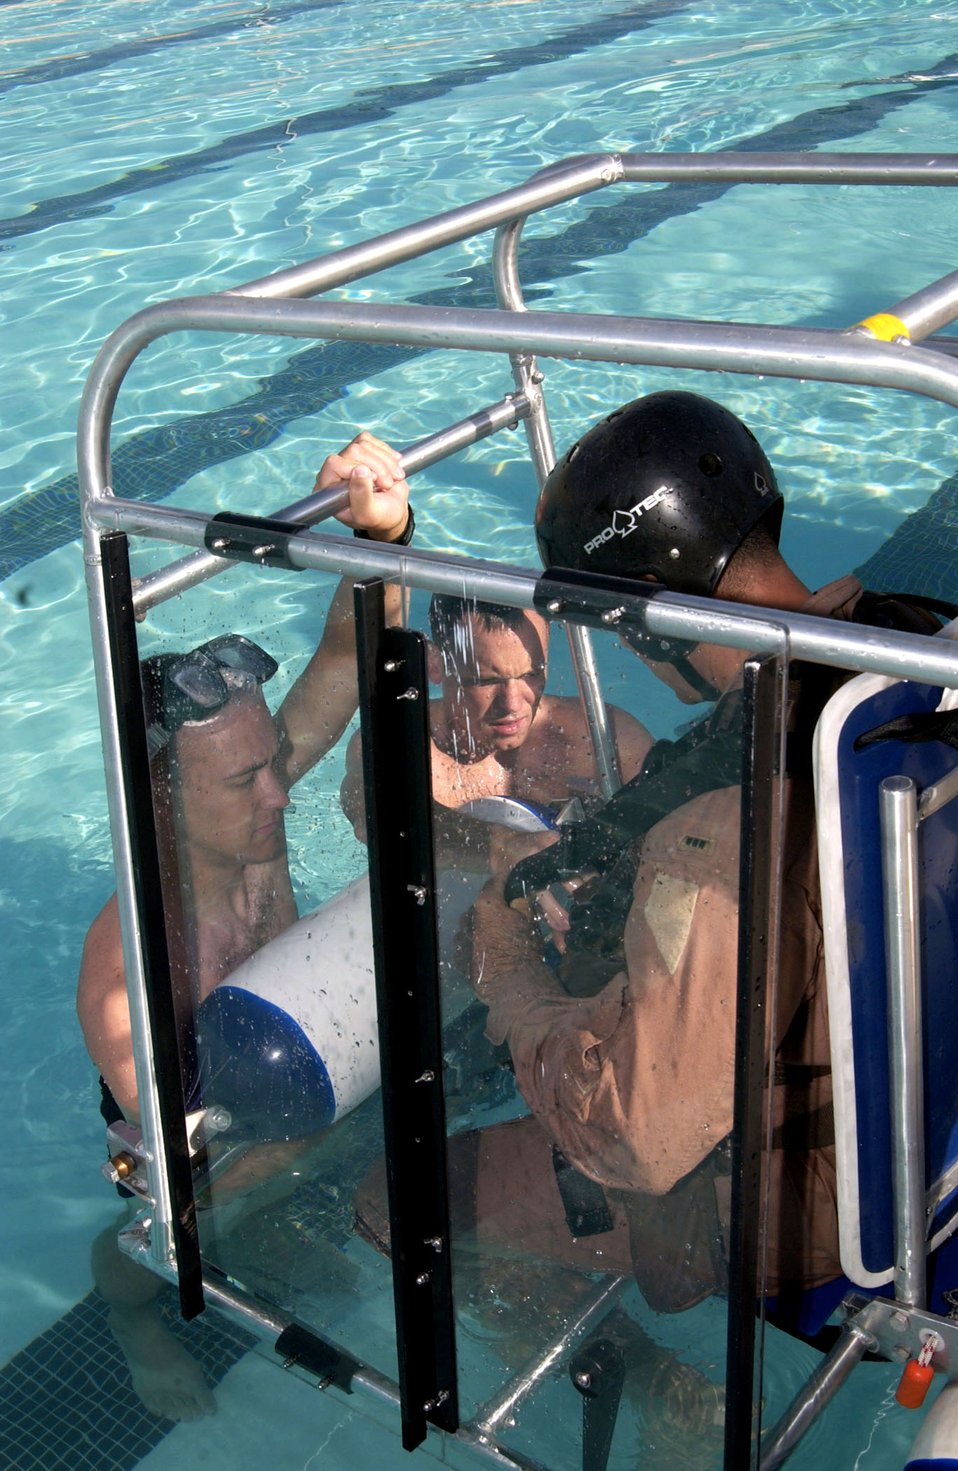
Practicing to be safe in the water

Staff Sgt. Chris Jones (left) and Staff Sgt. Michael Nettleingham help Army Chief Warrant Officer Ralph Hernandez strap in to a simulated cockpit before submerging him under water. The sergeants are survival, evasion, resistance and escape, or SERE, instructors at Nellis Air Force Base, Nev. The Army National Guardsmen, an OH-58 Scout instructor pilot, was taking his annual water survival training.